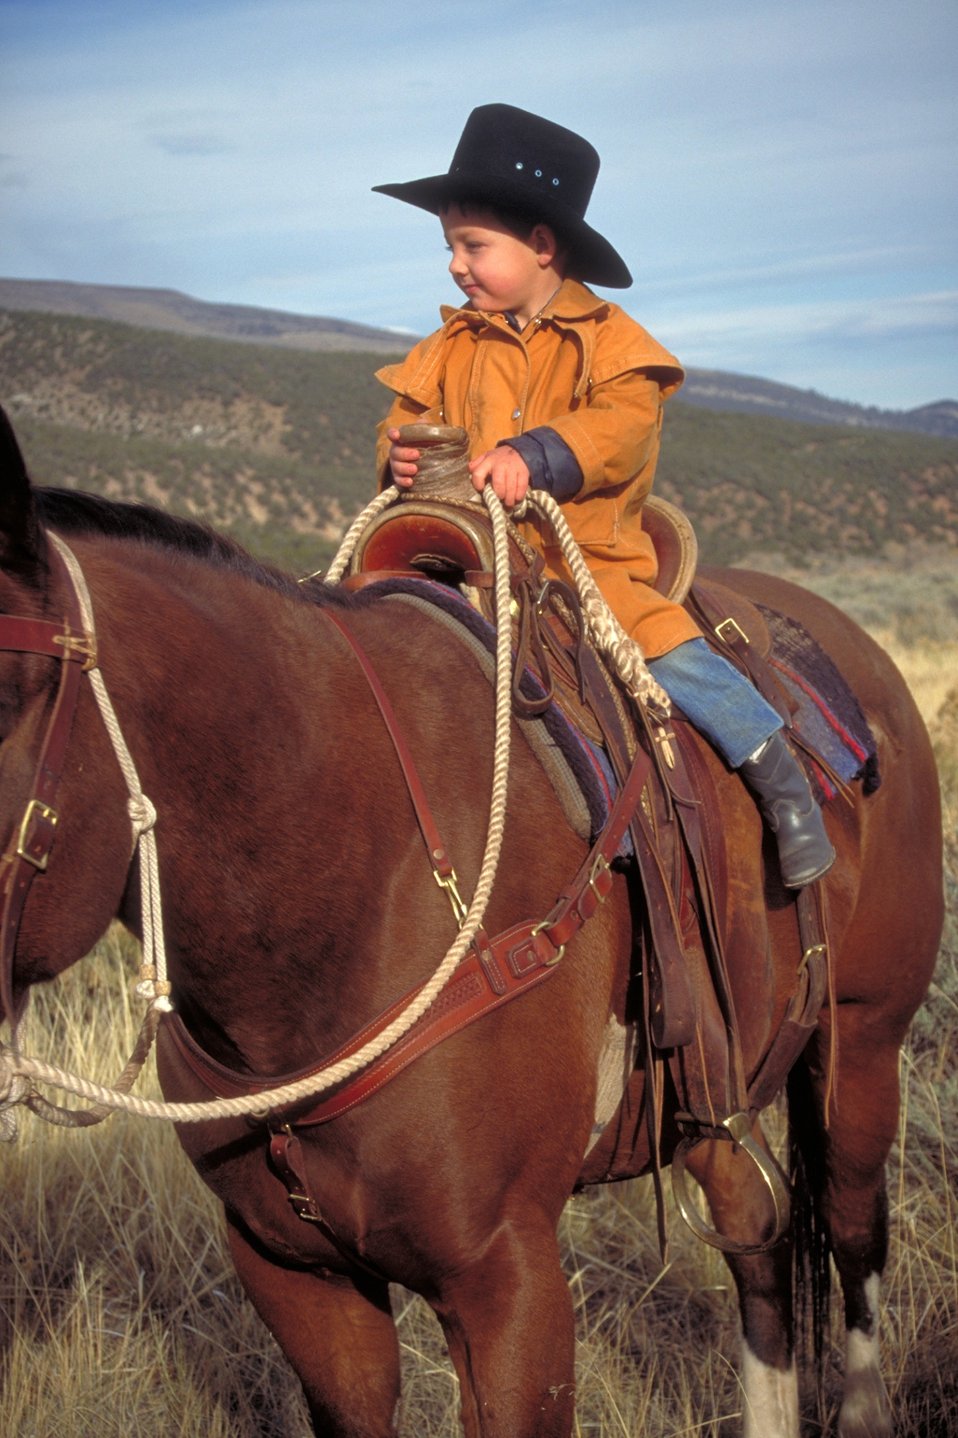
Working cowboys living near Vernal, Utah.